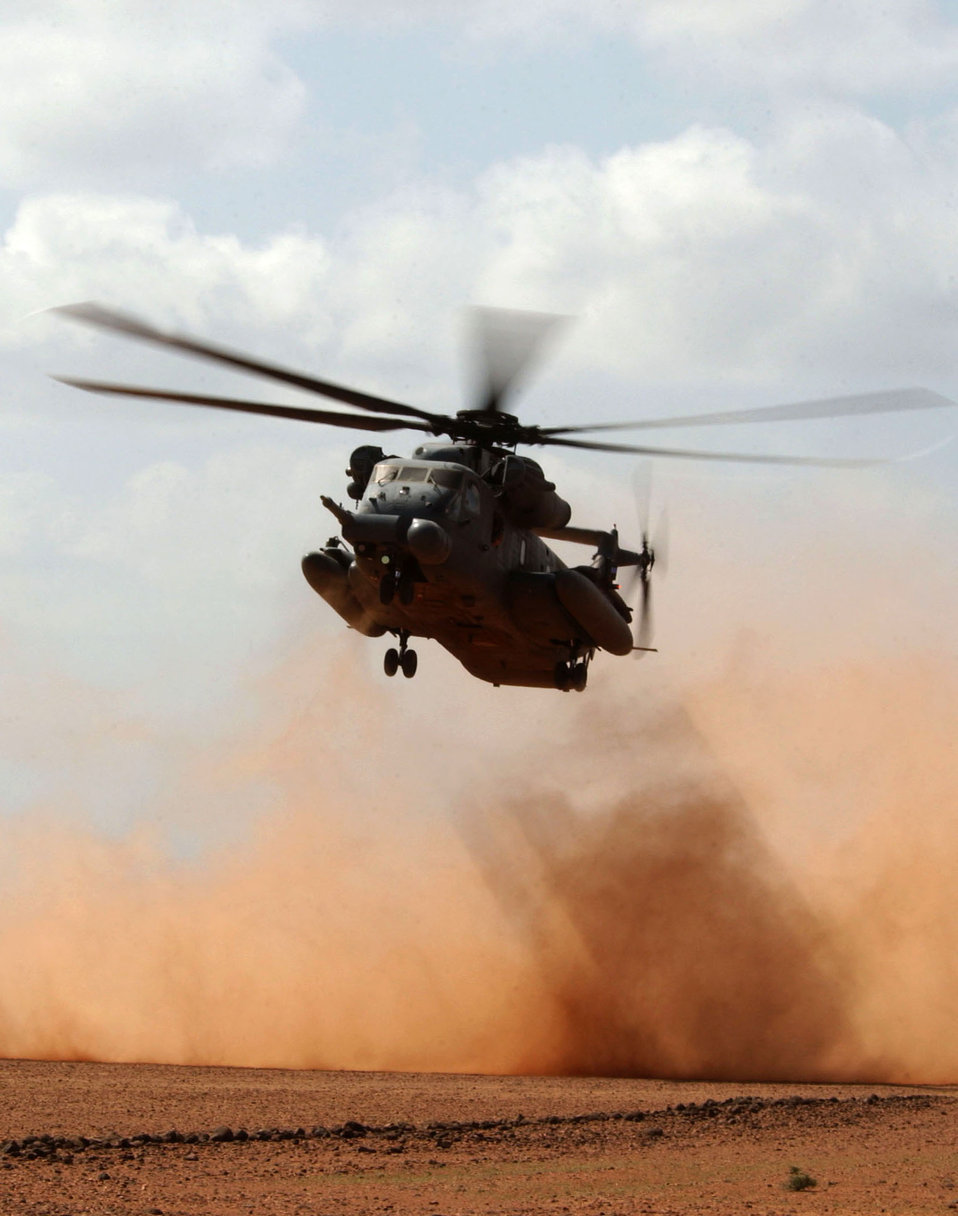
Dust in the wind

OPERATION ENDURIING FREEDOM (AFPN) -- An Air Force MH-53M Pave Low from the Air Force Special Operations Detachment at Camp Lemonier performs